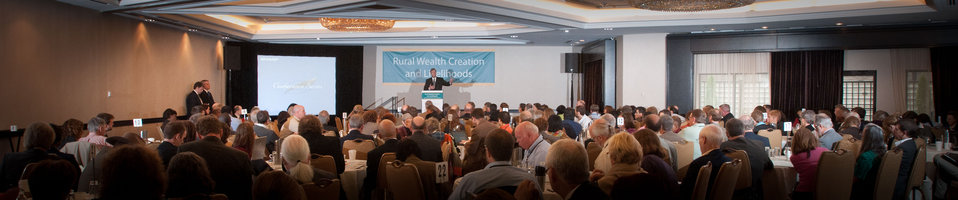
U.S. Department of Agriculture (USDA) Secretary Tom Vilsack was the keynote speaker for the Rural Wealth Creation and Livelihoods national conference for practitioners, researchers and policymakers, held at the Dupont Hotel, Washington DC, on Monday October 3, 2011. USDA partnered with the Ford Foundation to sponsor the conference.